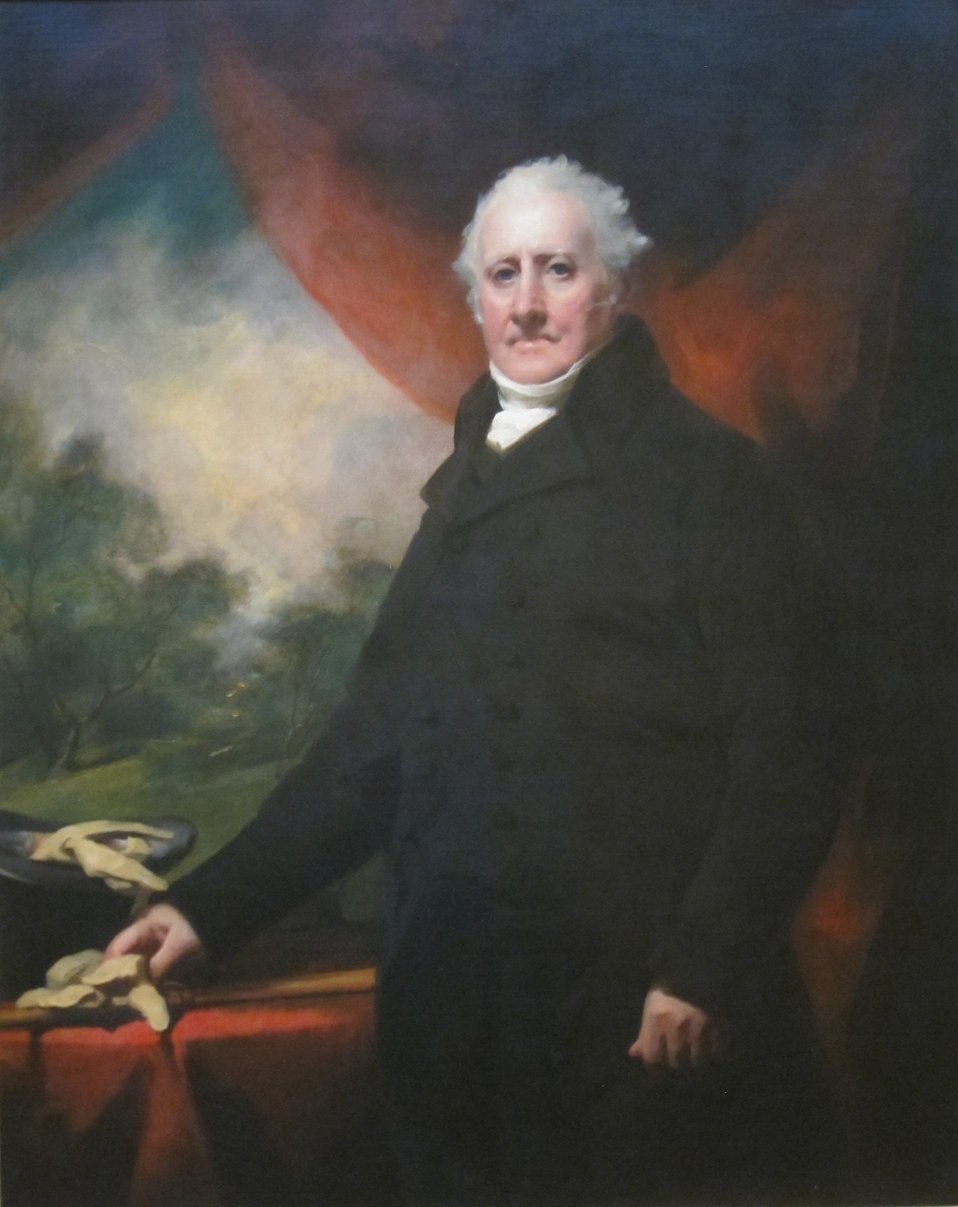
Portrait of Andrew Wauchope of Niddrie, oil on canvas painting by Henry Raeburn, c. 1800, Dayton Art Institute